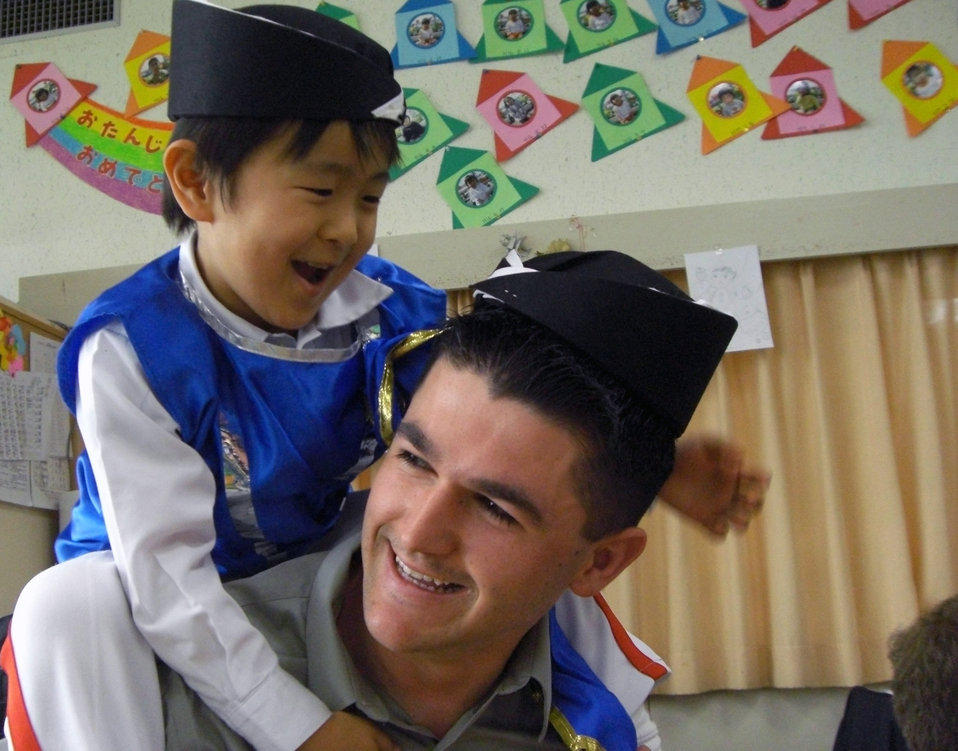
Kadena Airmen volunteer time to Japanese children

Airman 1st Class Jacob Davidson plays with a child from the Isshin Preschool Feb. 26 in Miyazaki Prefecture, Japan. Airmen from Kadena Air Base, Japan, volunteered to teach English skills at the preschool during a week-long bilateral training event with the Japan Air Self Defense Force at Nyutabaru Air Base. Airman Davidson is assigned to the from the 18th Communication Squadron.